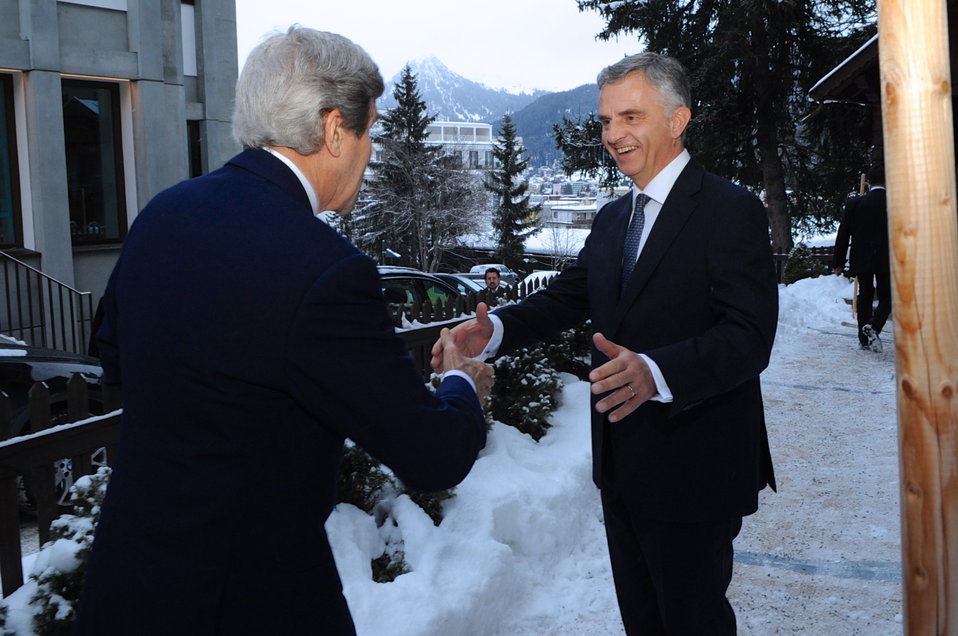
Swiss President Burkhalter Greets Secretary Kerry in Davos

Swiss Federation President Didier Burkhalter greets U.S. Secretary of State John Kerry before a bilateral meeting on the sidelines of the World Economic Forum in Davos, Switzerland, on January 24, 2014.